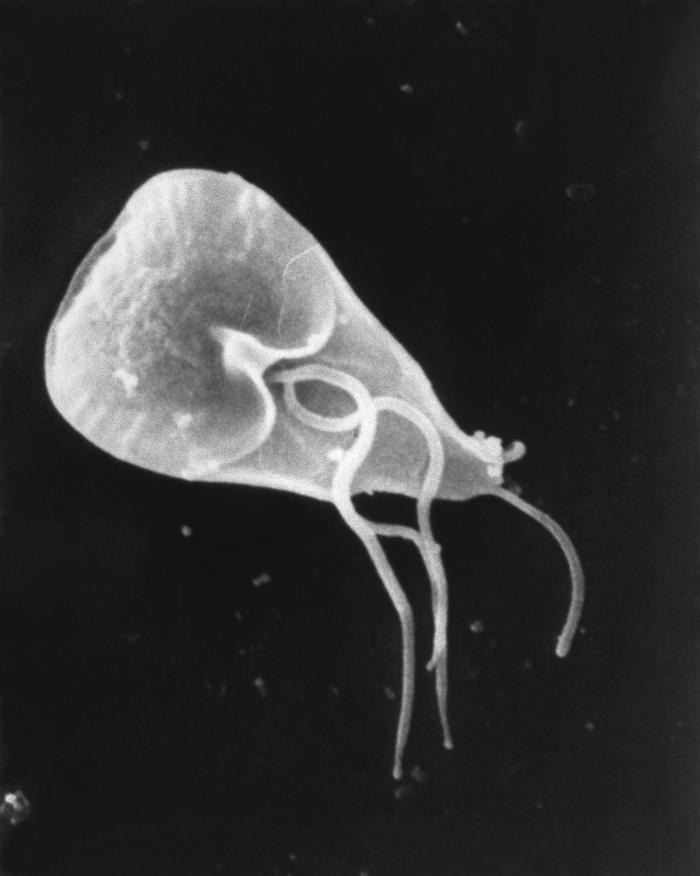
This scanning electron micrograph (SEM) revealed some of the external ultrastructural details displayed by a flagellated Giardia lamblia protozoan parasite. G. lamblia is the organism responsible for causing the diarrheal disease "giardiasis". Once an animal or person has been infected with this protozoan, the parasite lives in the intestine, and is passed in the stool. Because the parasite is protected by an outer shell, it can survive outside the body, and in the environment for long periods of time.